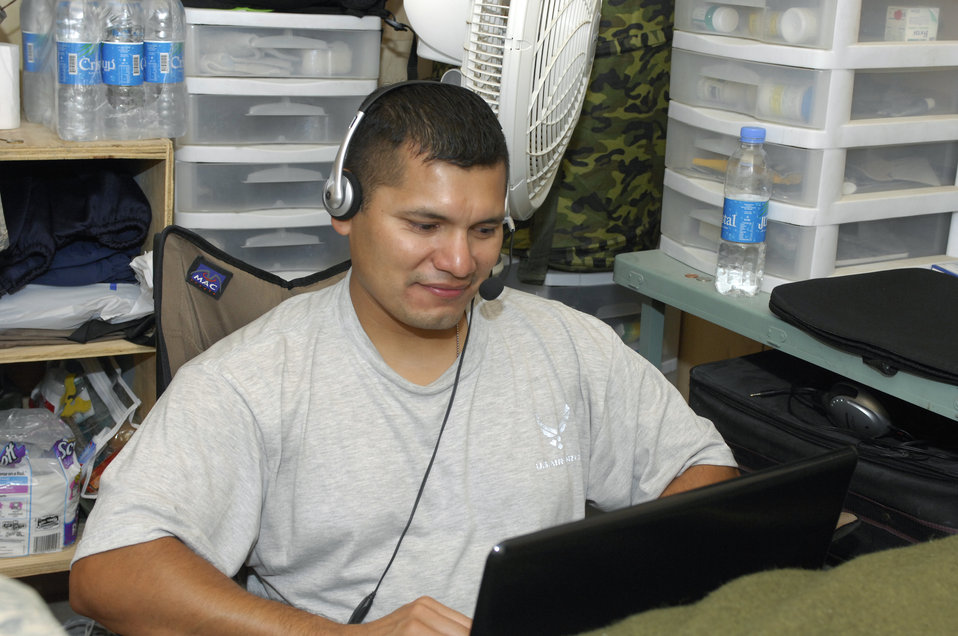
Family uses technology to cope with deployment separation

Staff Sgt. Juan Gutierrez uses his computer to conduct a video chat with his children while deployed Sept. 26, 2009, at Bagram Airfield, Afghanistan. Sergeant Gutierrez is currently serving as the dental clinic NCO in charge for Task Force Medical at Bagram Airfield, Afghanistan.